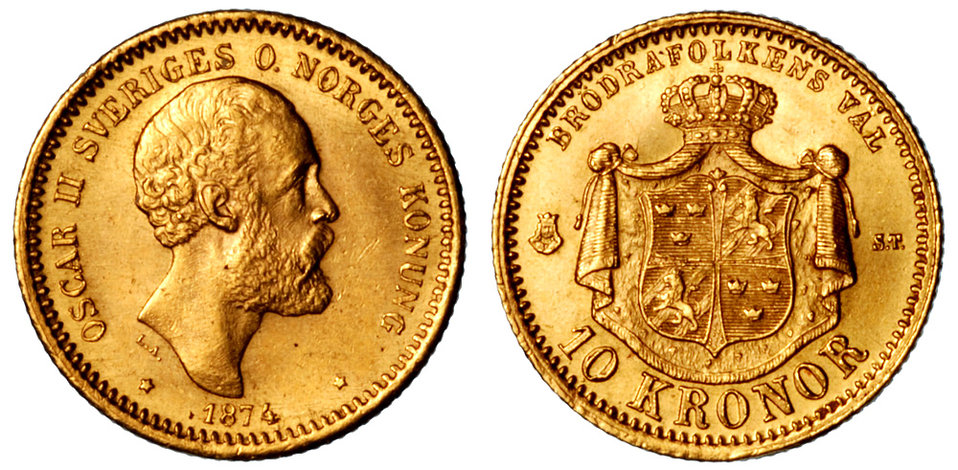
10 kr 1874